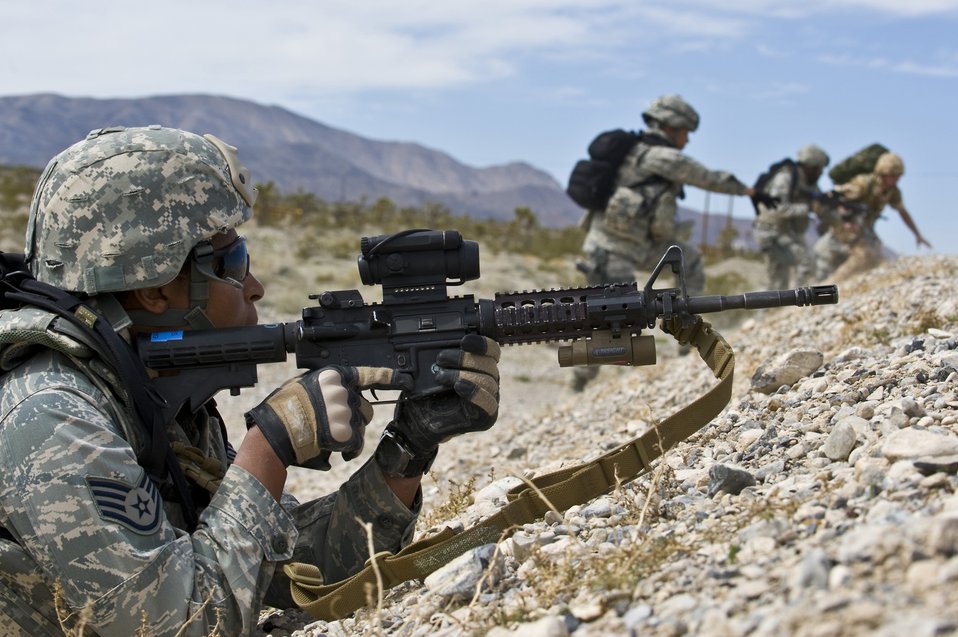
I'll cover you

Staff Sgt. Seth Stinnet provides cover during a casualty evacuation scenario March 10, 2011, as part of Desert Eagle at the Nevada Test and Training Range. Sergeant Stinnet is a security forces Airman assigned to the 822nd Base Defense Squadron at Moody Air Force Base, Ga.